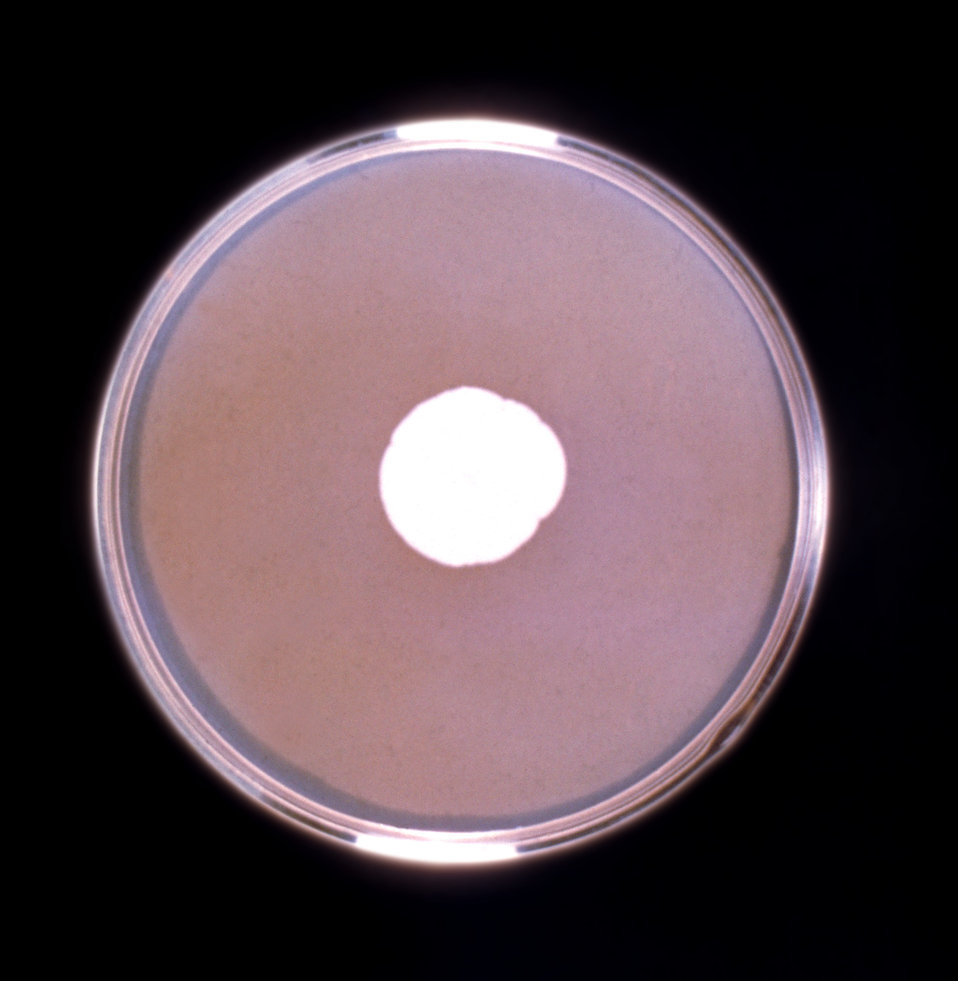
This is a plate culture of the fungus Candida albicans.